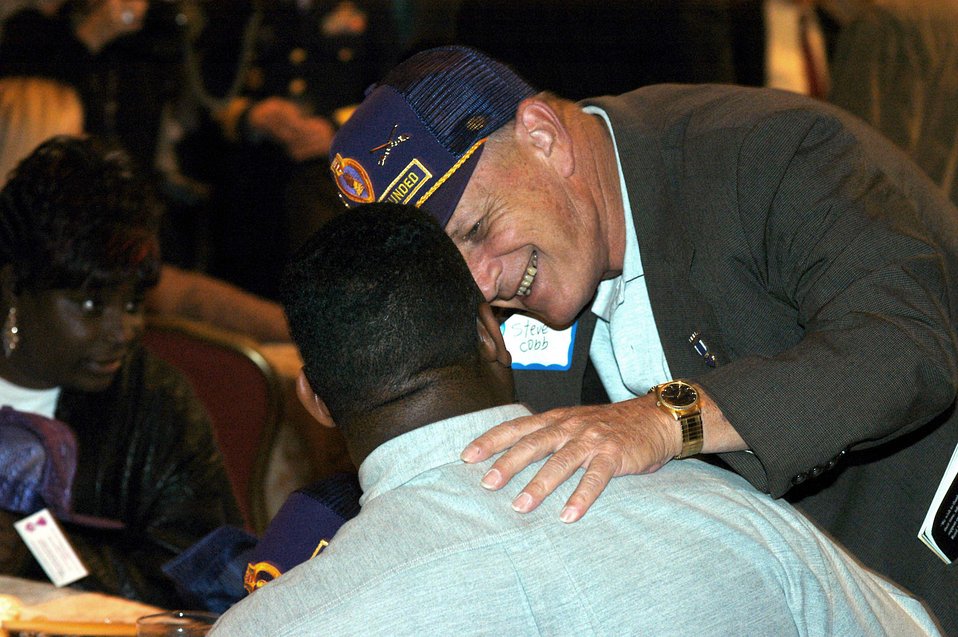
Vietnam veteran ensures every hero gets proper welcome

WASHINGTON -- Steve Cobb hands out information and encouragement to wounded veterans of operations Iraqi Freedom and Enduring Freedom. Three times a week he meets wounded servicemembers who arrive at Andrews Air Force Base, Md., from Iraq or Afghanistan.